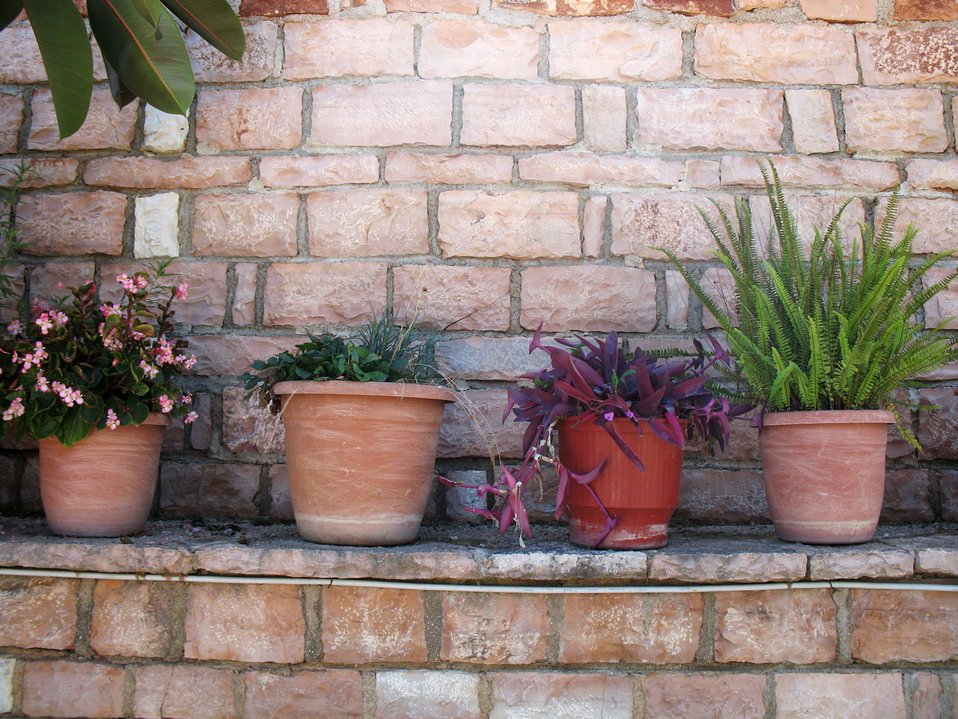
Flower pots on the sill.